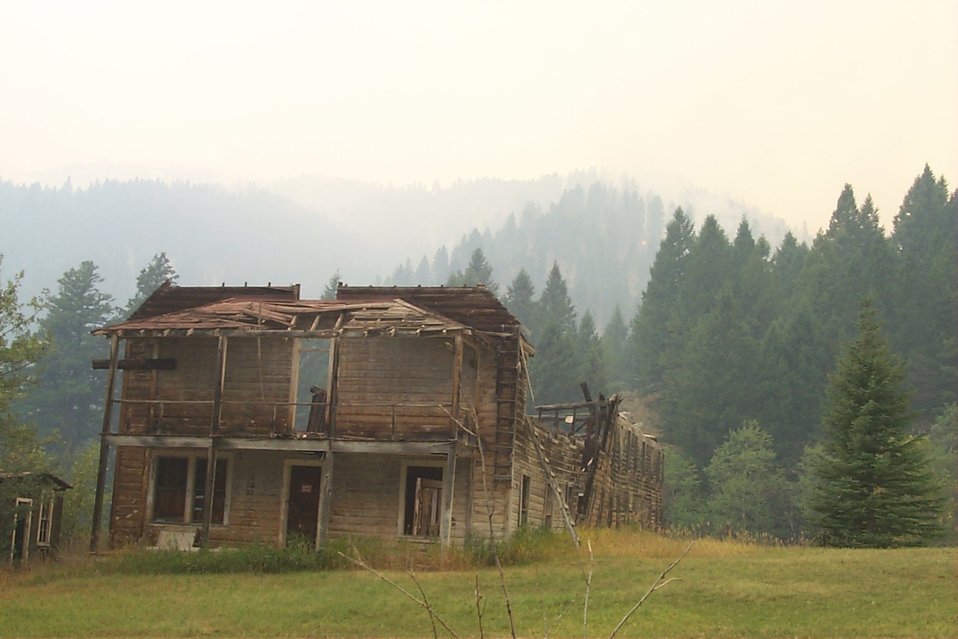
Urban interface Fire Clearwater Fire Salmon Field Office USRD Upper Snake River District